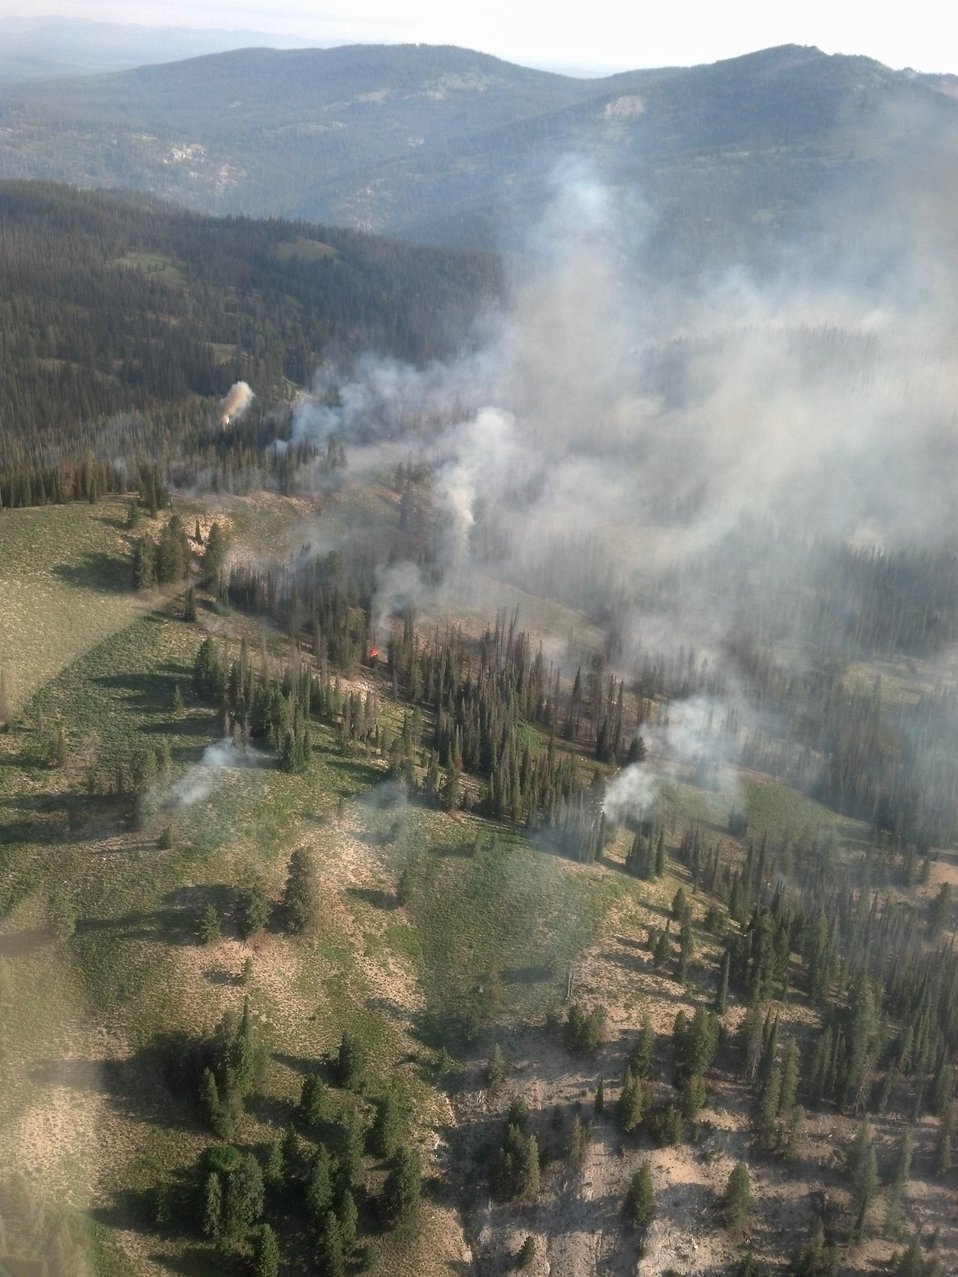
The Ridge Fire in the Boise National Forest, ID near Lowman, ID began on Jul. 16, 2013 by lightning and has consumed approximately 5,143 acres. The Ridge Fire is approximately 20% contained.